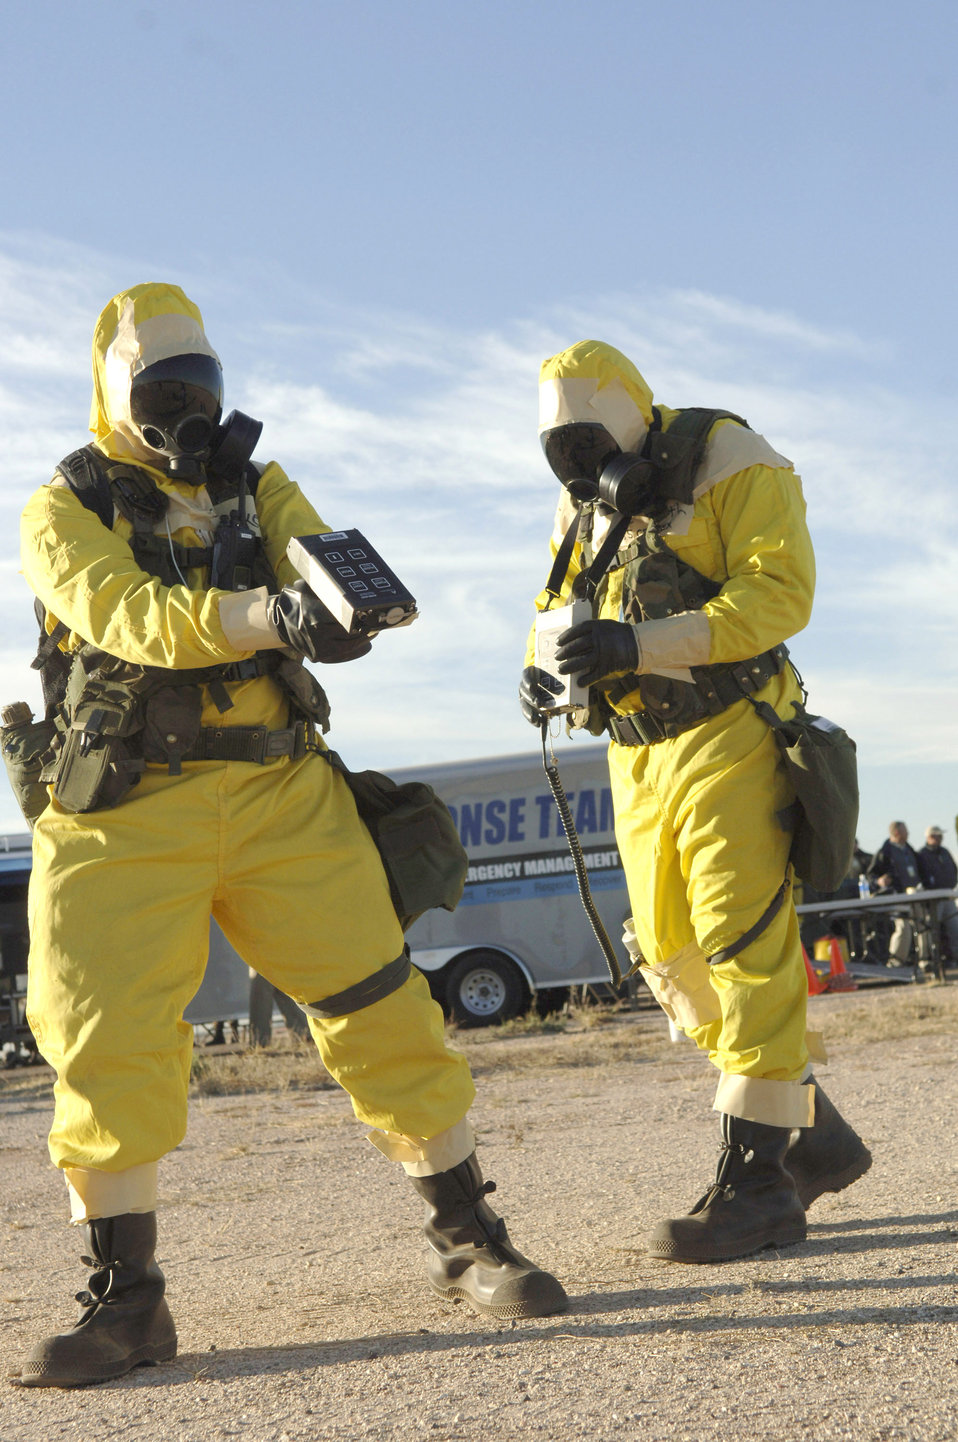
Vigilant Shield 07

Airmen 1st Class Bryan Keith and Lawrence Ackerman check the area for contamination prior to setting up the contamination control station Dec. 4 at Davis-Monthan Air Force Base, Ariz., during Vigilant Shield 07. Vigilant Shield 07 is a joint nuclear weapon accident exercise designed to train Department of Defense and federal agencies on response efforts as a cohesive team.